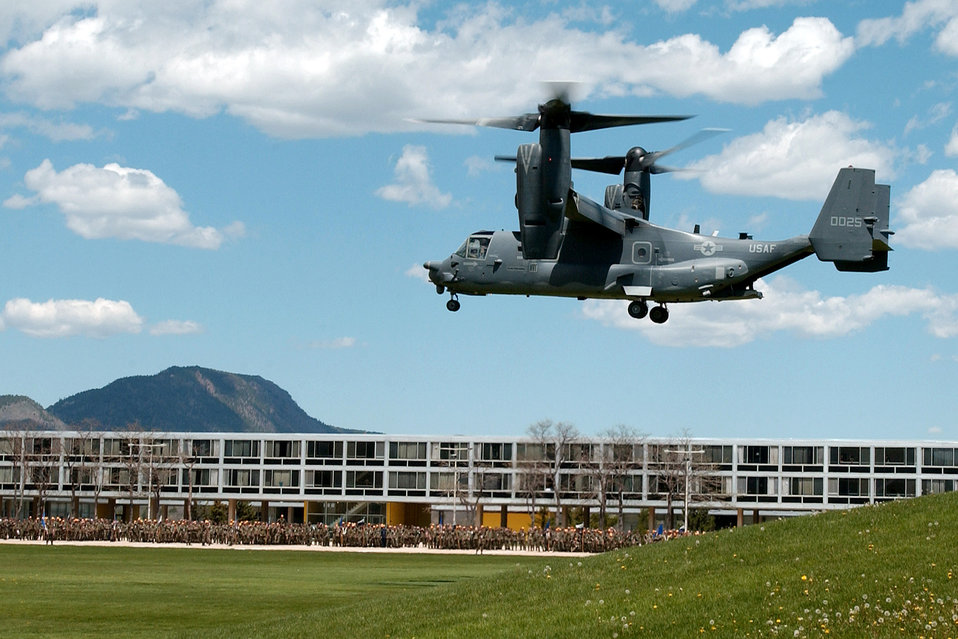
Osprey comes for a visit

A CV-22 Osprey prepares to land at the U.S. Air Force Academy May 11. Cadets in the Department of Aeronautical Engineering's High-Performance Computing Research Center contributed to making this aircraft an operational reality through their research in computational fluid dynamics.